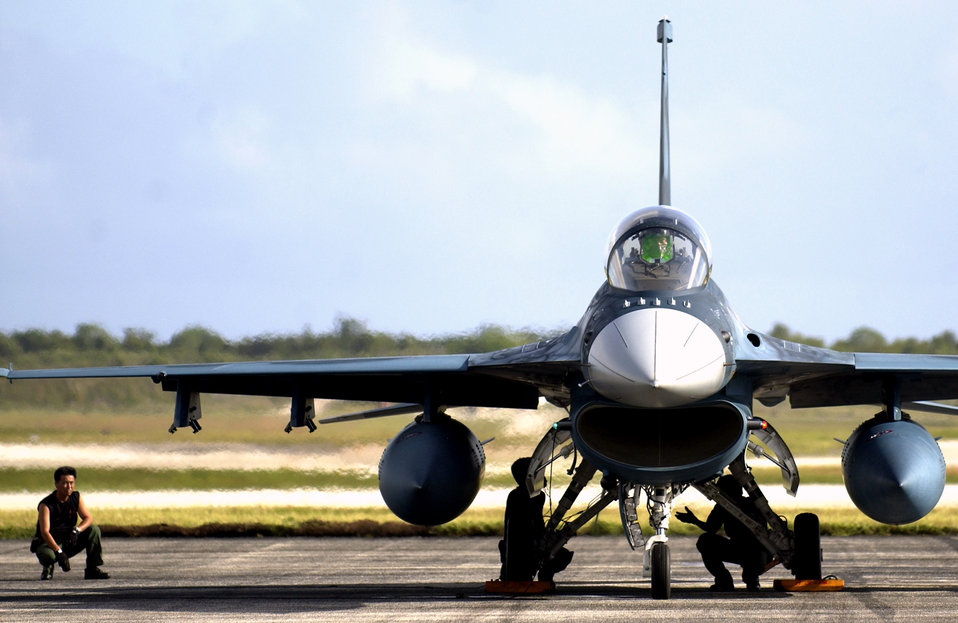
Maintenance crews prep fighters at Cope North

A Japan Air Self Defense Force F-2 fighter prepares for take off June 20 at Andersen Air Force Base, Guam. The F-2 fighters are deployed here as part of Exercise Cope North, a bilateral field training exercise conducted to increase combat readiness and interoperability, concentrating on coordination and evaluation of air tactics, techniques, and procedures between U.S. forces and the JASDF.